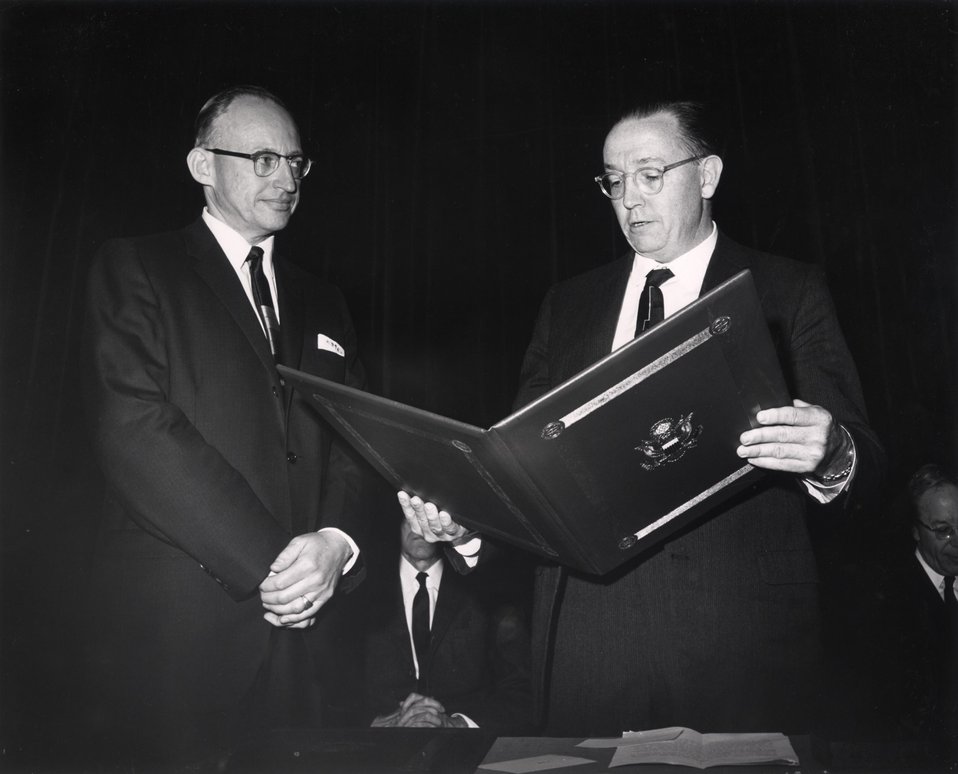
Lawrence Award Ceremony, 1963.